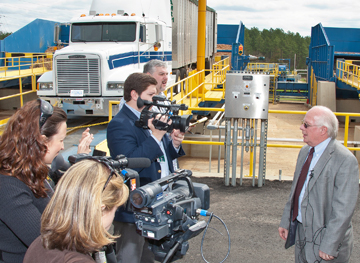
EM Celebrates Ribbon Cutting for New Biomass Plant at Savannah River Site

DOE Savannah River Operations Office Manager Dr. David Moody explains to regional news media that the startup celebration culminates a 30-month investment of over 600,000 labor hours to safely construct the new 34-acre renewable energy facility at SRS, under the single largest renewable Energy Savings Performance Contract in our Nation’s history.